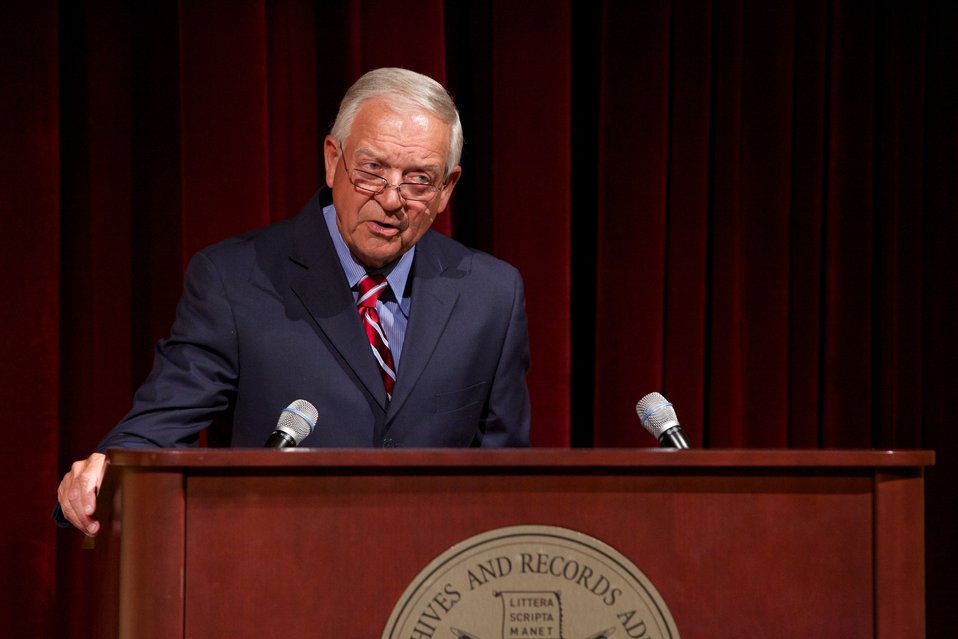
The Role of Congress in International Crises